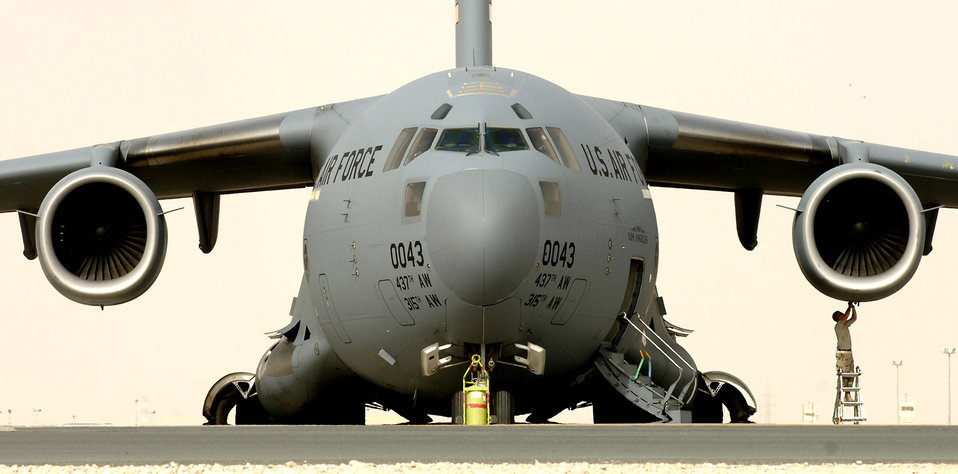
CENTAF Airpower Summary for April 22, 2007

A maintenance Airman checks a C-17 Globemaster III prior to a support mission in Iraq. C-17s provide intra-theater heavy airlift support.